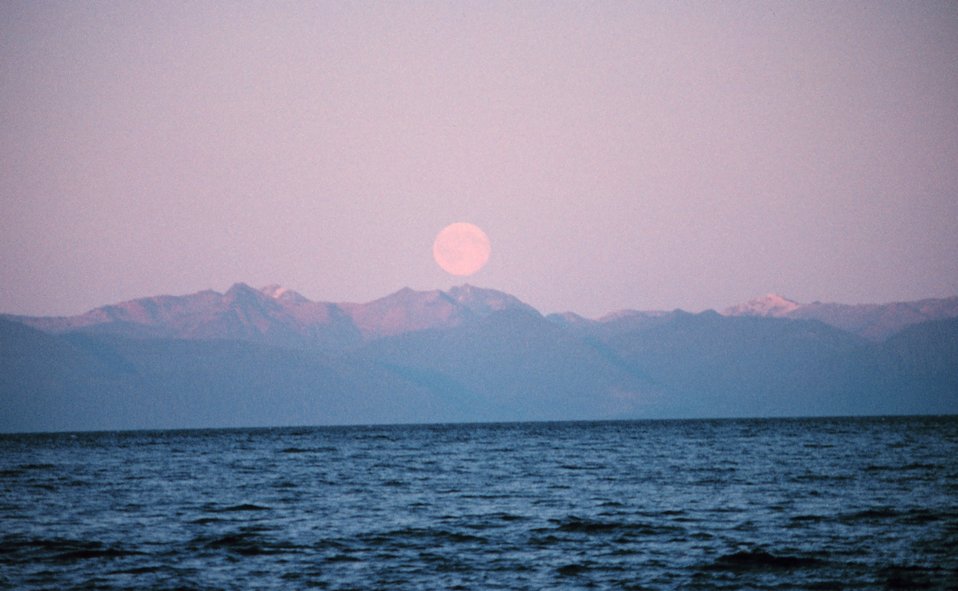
Moonrise in Chatham Strait.